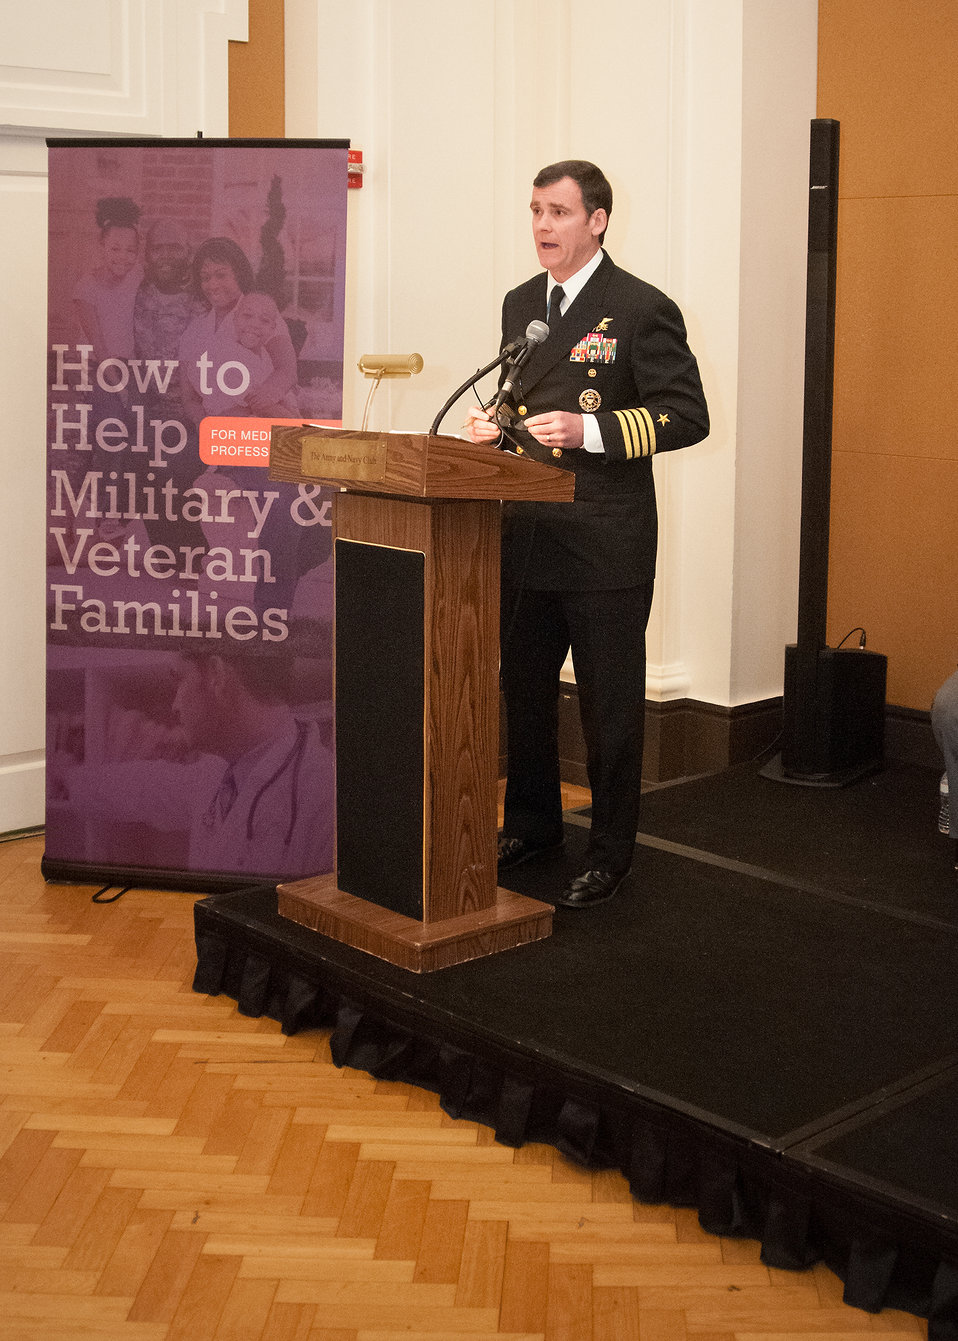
U.S. Navy Captain Todd Veazie, Executive Director of Joining Forces, represented First Lady Michelle Obama and Dr. Jill Biden’s, Joining Forces program at the United States Department of Agriculture (USDA) and Department of Defense (DOD) jointly launch event for the 'How to Help Military and Veteran Families' - a series of publications produced jointly by the USDA, National Institute of Food and Agriculture (NIFA) and DOD at the Army-Navy Club in Washington, DC, Monday, April 15, 2013.